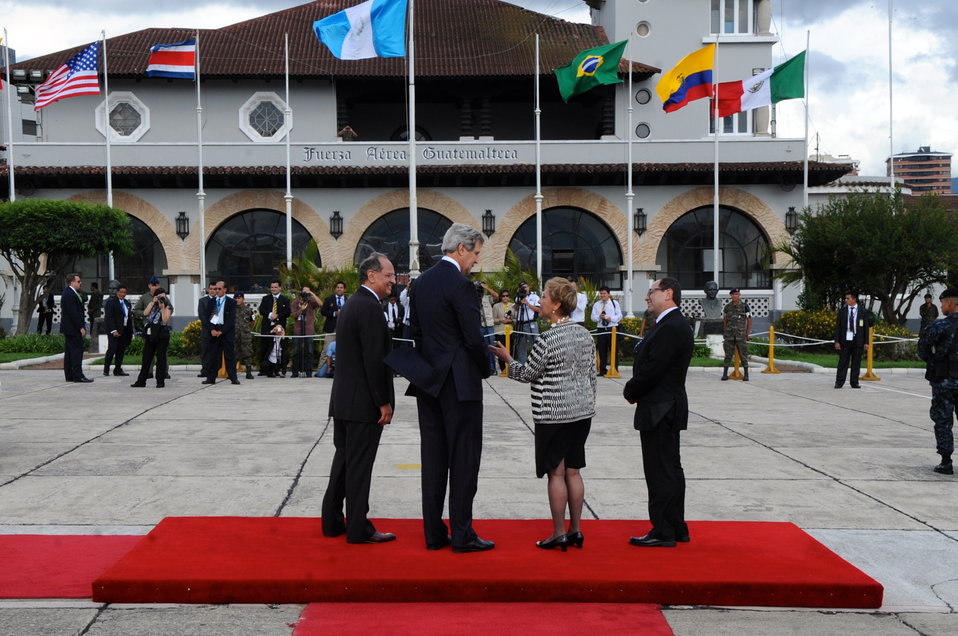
Secretary Kerry Arrives in Antigua, Guatemala

U.S. Secretary of State John Kerry is greeted by U.S. Ambassador to Guatemala Arnold Chacon, Guatemalan Deputy Foreign Minister Rita Claverie, and Guatemalan Vice Minister of Foreign Affairs Ivan Espinoza upon his arrival in Antigua, Guatemala, on June 4, 2013.